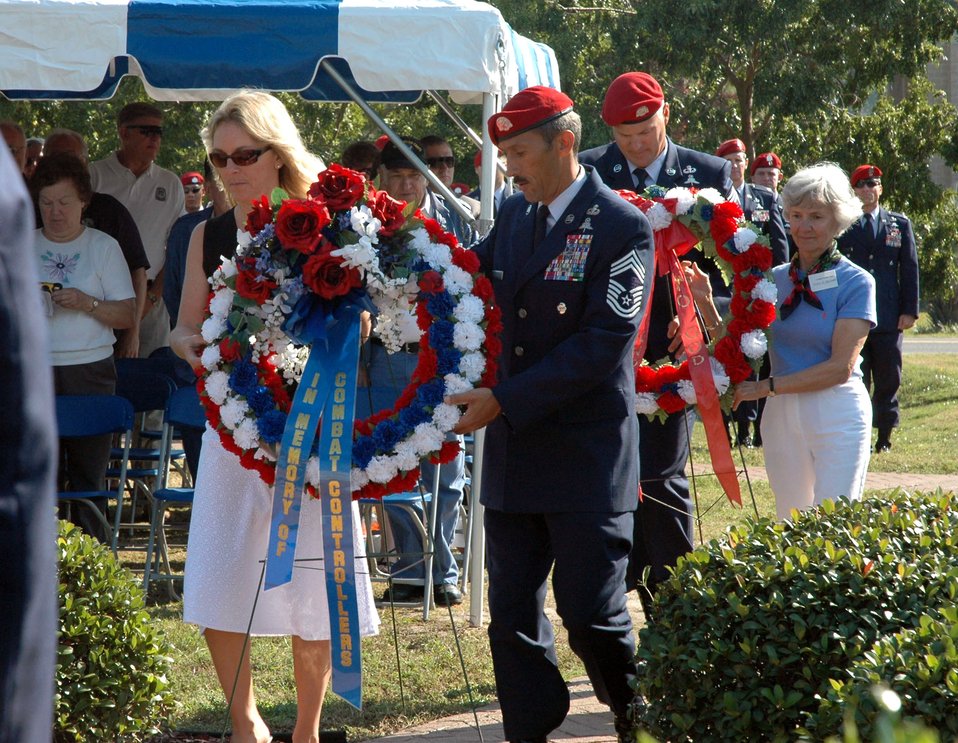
Combat controllers honor fallen comrades

Valerie Chapman (left), widow of fallen combat controller and Air Force Cross recipient Tech. Sgt. John Chapman, and Doris Maitland, sister of Andre Guillet, listed as missing in action from the Vietnam War, lay wreaths in honor of all the fallen controllers during the Combat Control Association reunion Nov. 3 at Hurlburt Field, Fla. Assisting the family members are Chief Master Sgt. Michael Ramos from the 720th Special Tactics Group, and Chief Master Sgt. Timothy Hoye from the 23rd Special Tactics Squadron.